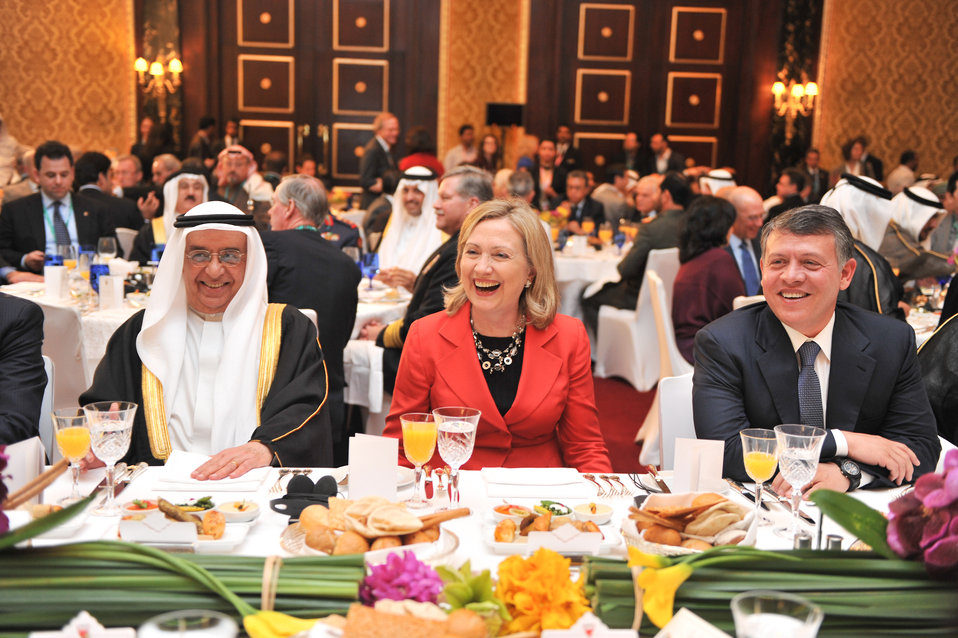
Secretary Clinton Delivers Remarks at the Opening Dinner

U.S. Secretary of State Hillary Rodham Clinton delivers remarks at the opening dinner of the Seventh IISS Regional Security Summit Manama Dialogue in Bahrain, December 4, 2010.